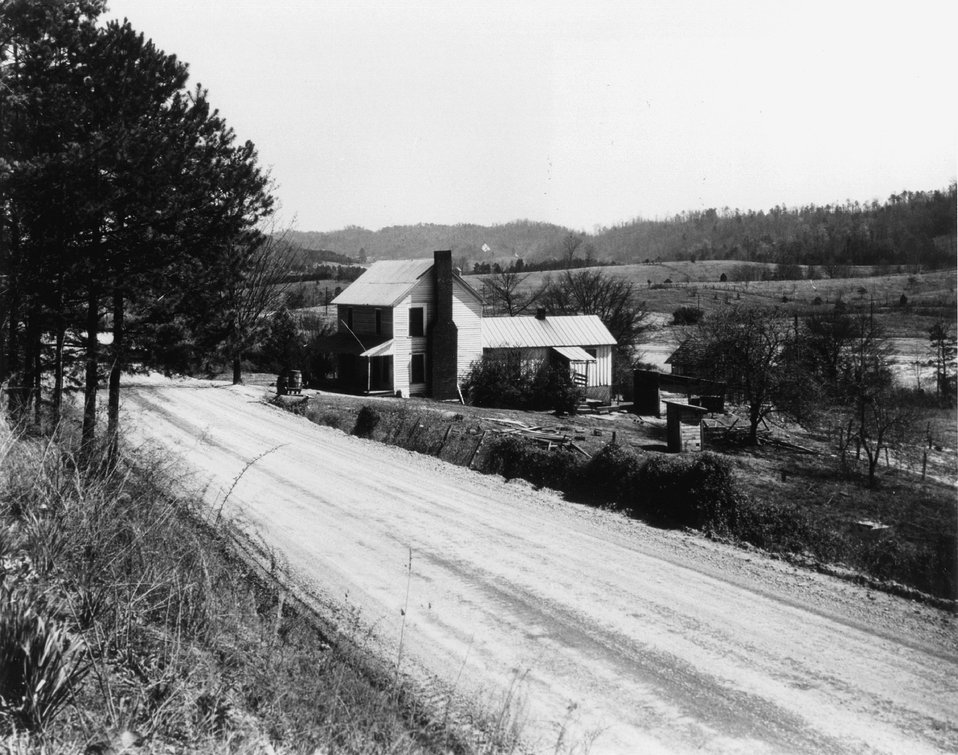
Oak Ridge Area. c. 1939